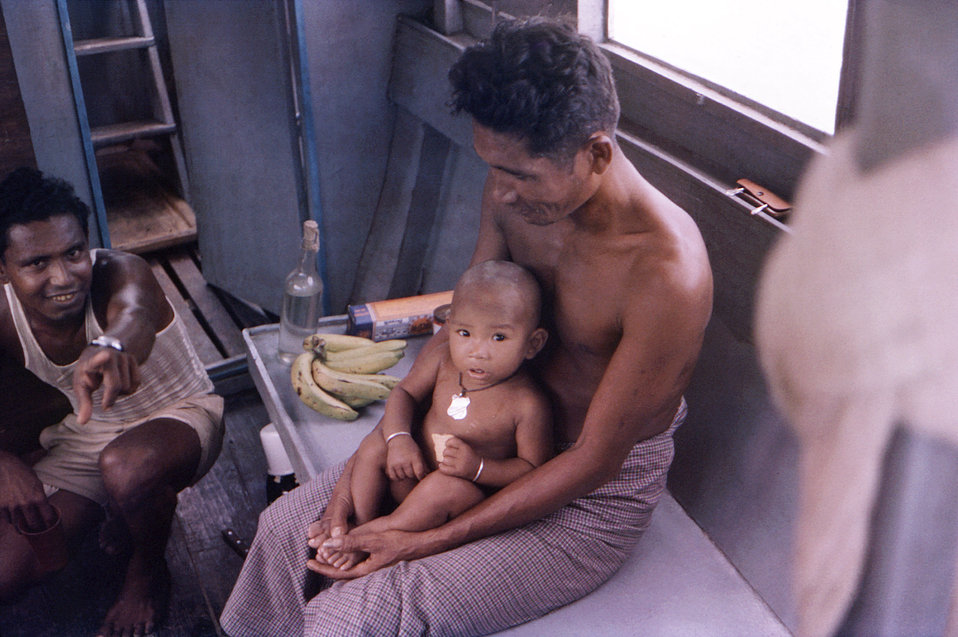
This October, 1975 photograph depicted Captain, boat driver, Robin Gomes, crouching down in a 'UNICEF 8' boat cabin, while conducting a trading transaction with a Burmese Buddhist villager and his child. The Buddhists, otherwise known as Marmas, migrated to this region of the World from ancient Burma, which is now known as Myanmar. The boat was traveling along a Patuakhali District waterway, in the country of Bangladesh.